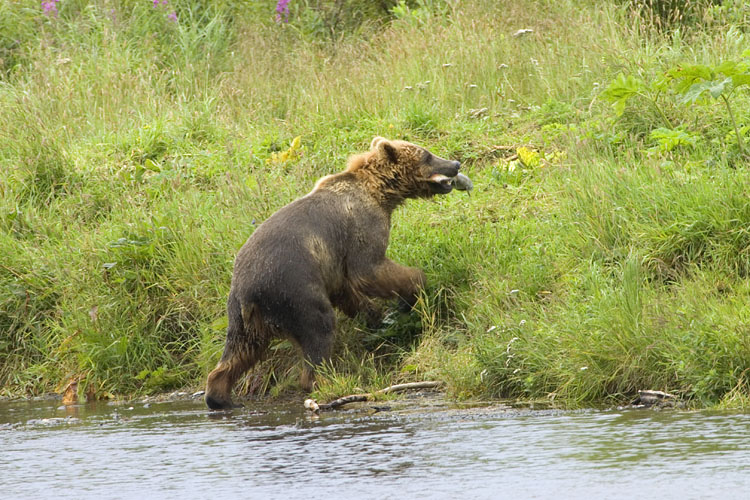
Wildlife of Kodiak Refuge